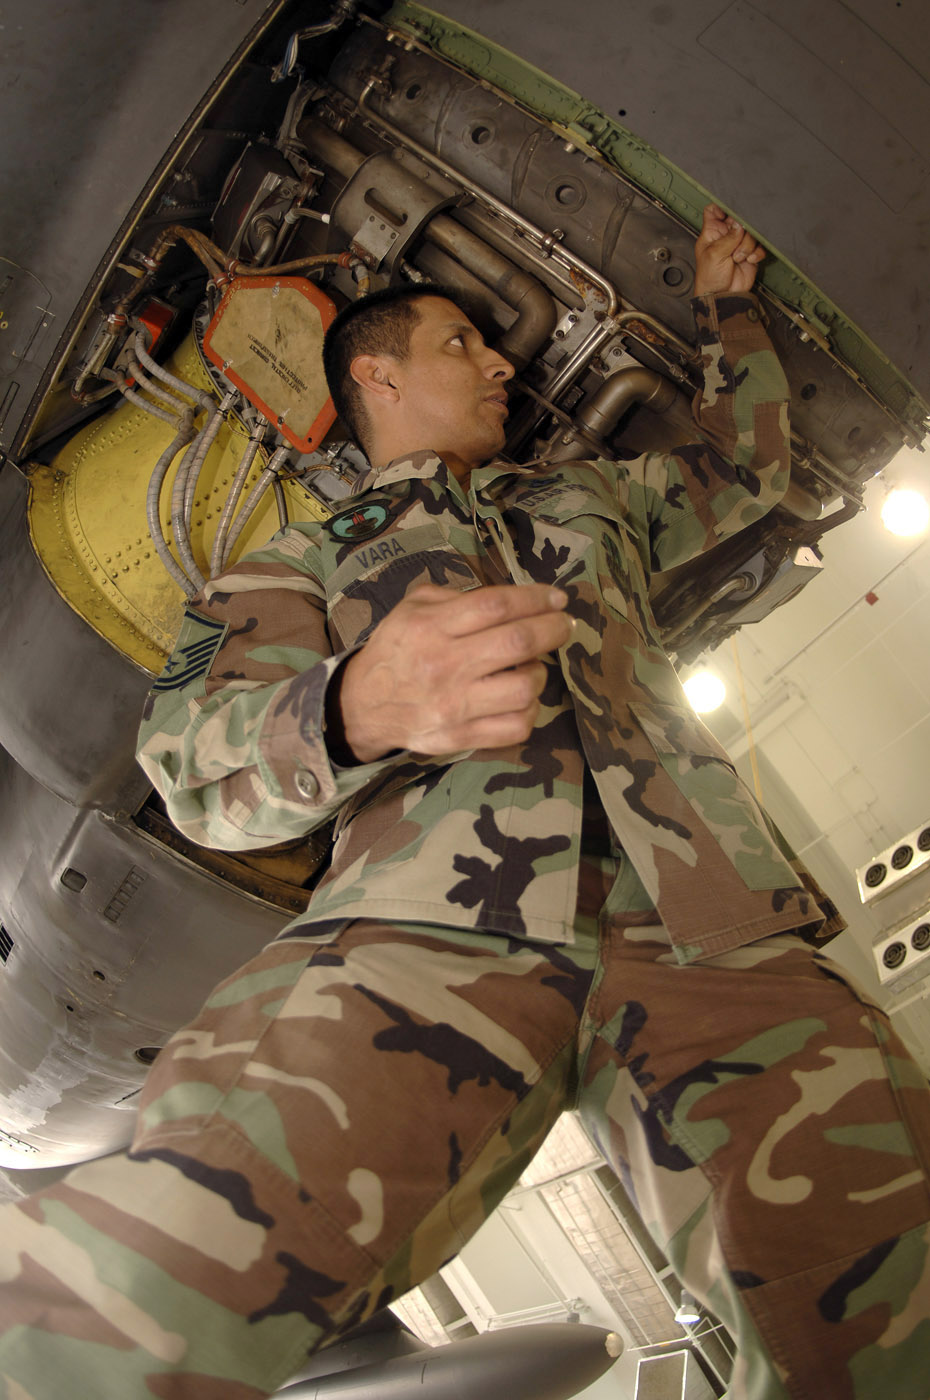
Phase maintenance

ANDERSEN AIR FORCE BASE, Guam (AFPN) -- Master Sgt. Hector Vara inspects a B-52 Stratofortress engine during phase maintenance Jan. 31. The B-52s return to Andersen from a forward operating location after flying 300 hours.